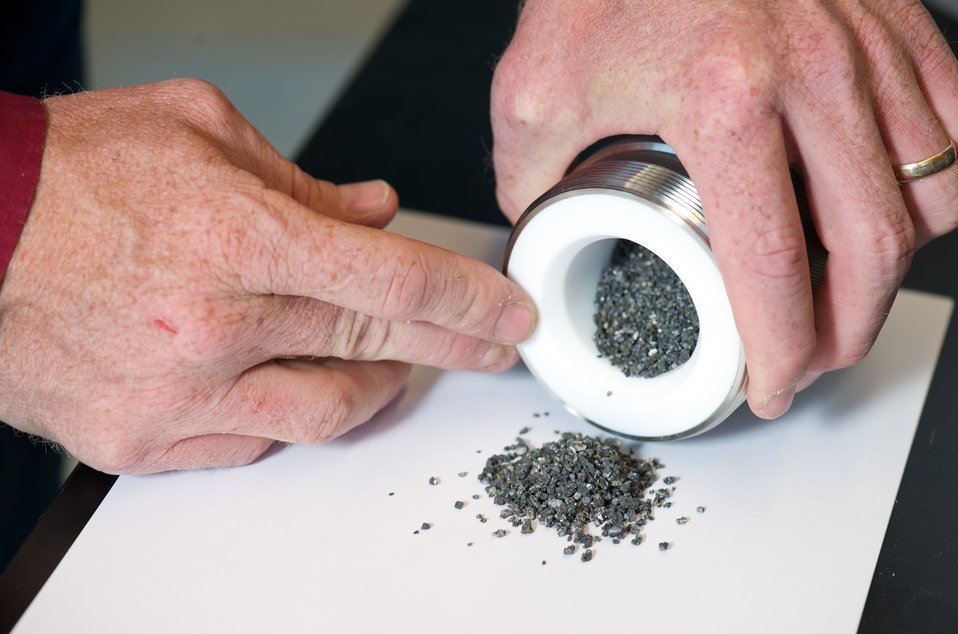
Idaho National Laboratory studies help inform work by characterizing chemical signatures that result when certain types of rocks are exposed to carbon dioxide.